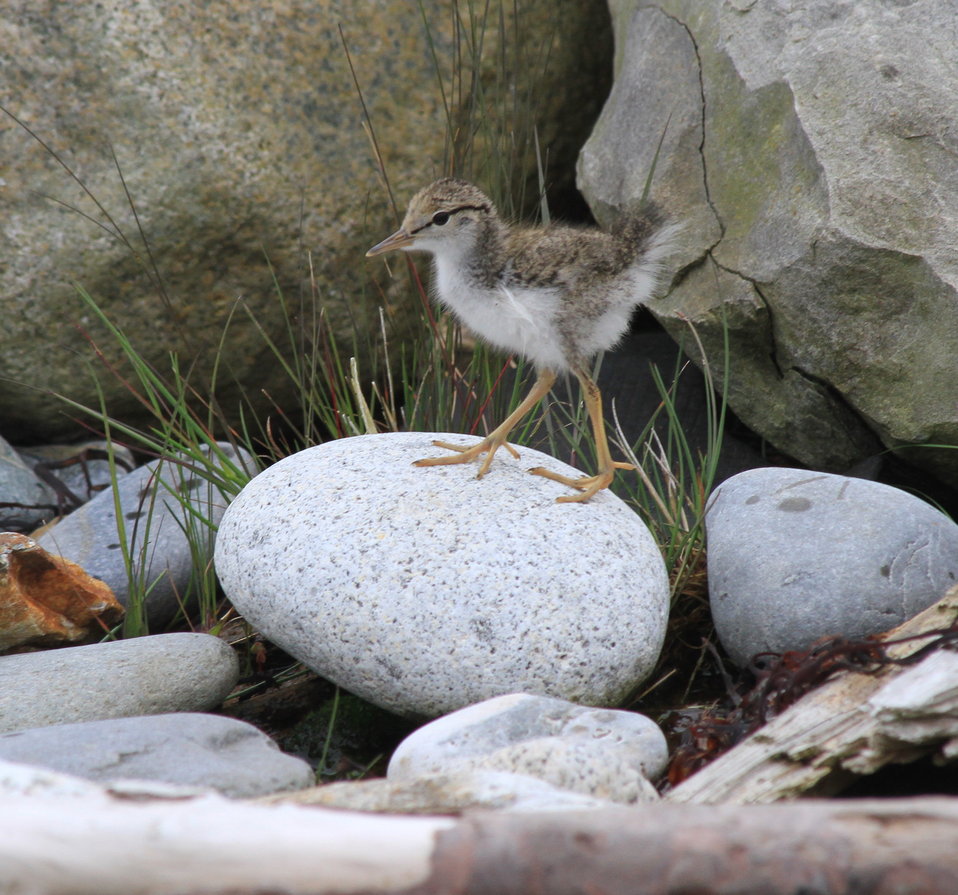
Spotted sandpiper chick

Metinic Island, Maine Coastal Islands NWR. Summer with the Seabirds blog: mainecoastalislands.wordpress.com/2010/07/23/metinic-isla...